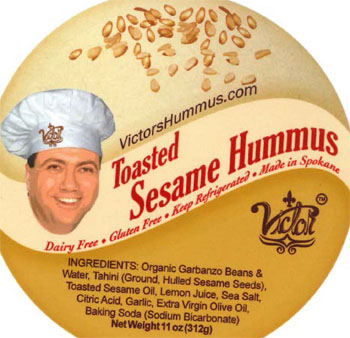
RECALLED – Toasted Sesame Hummus

December 20, 2013 – Product Recall – Spokane Produce, Inc. Voluntarily Recalls Victor™ Toasted Sesame Hummus Because Of Possible Health Risk.